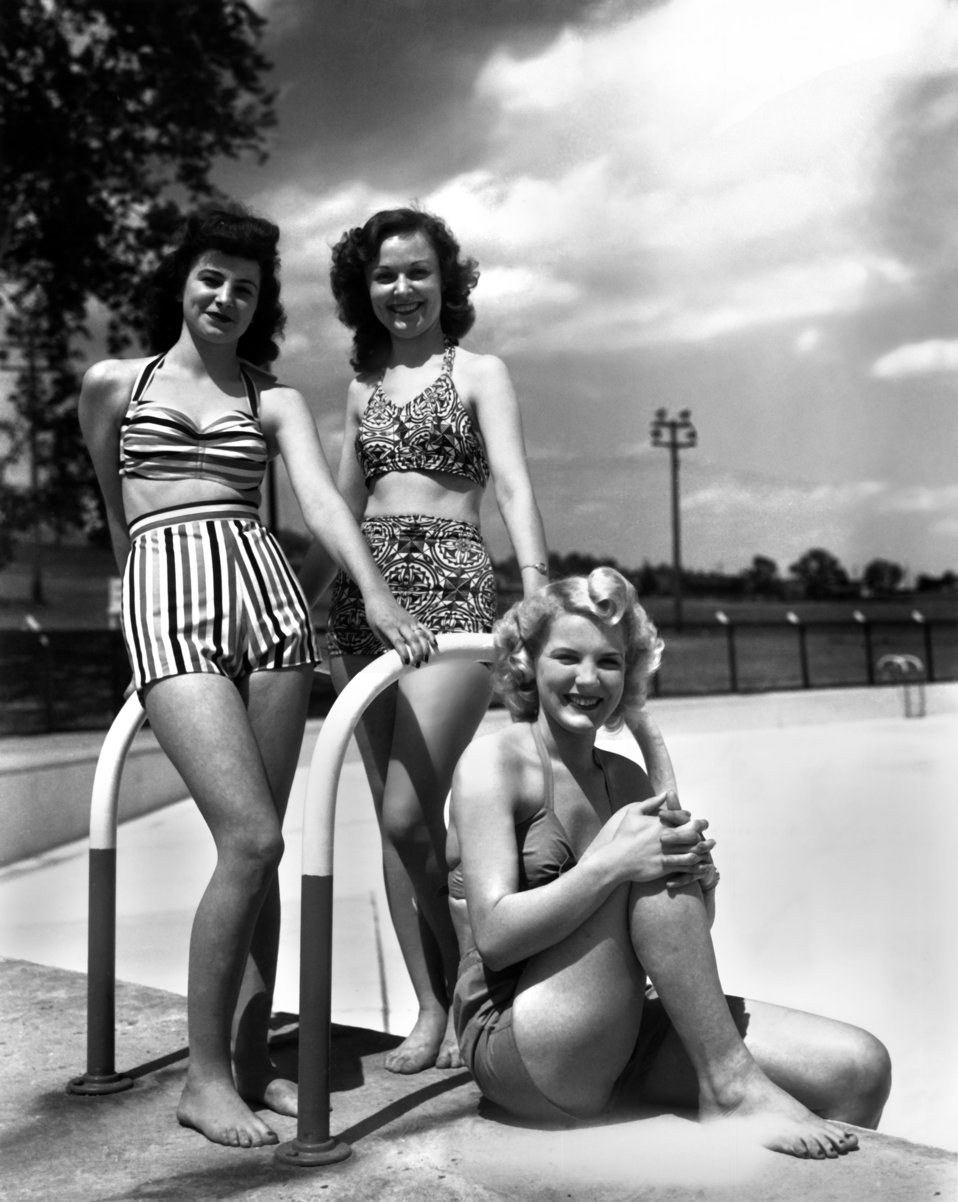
Swimming Pool- Louise Cox, Vilma Strange, and Marilyn Angel 1946 Oak Ridge

1687-6 DOE photo Ed Westcott 5-9-1946 Oak Ridge Tennessee